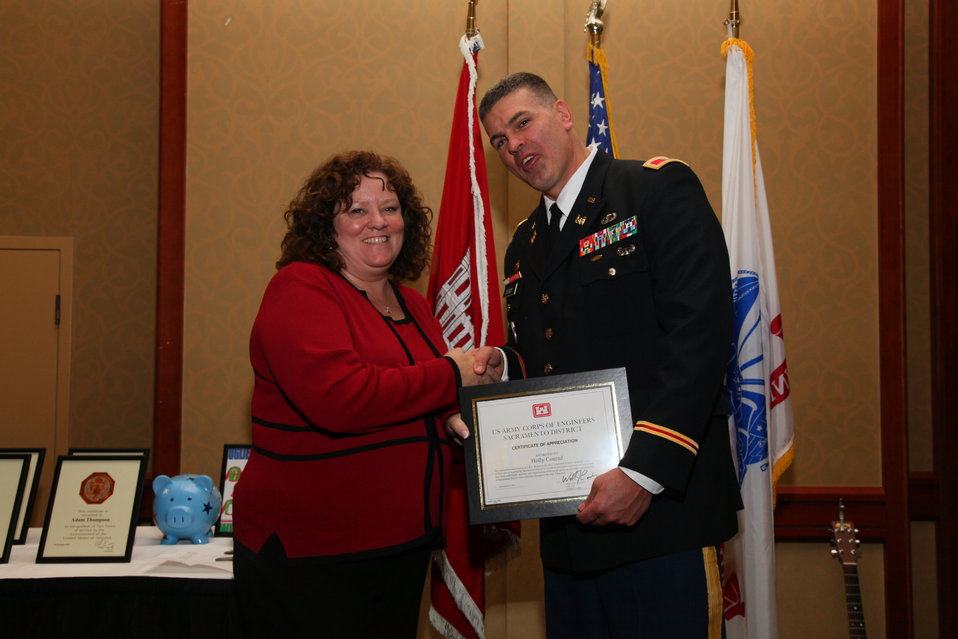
Sacramento District Holiday Party 2011